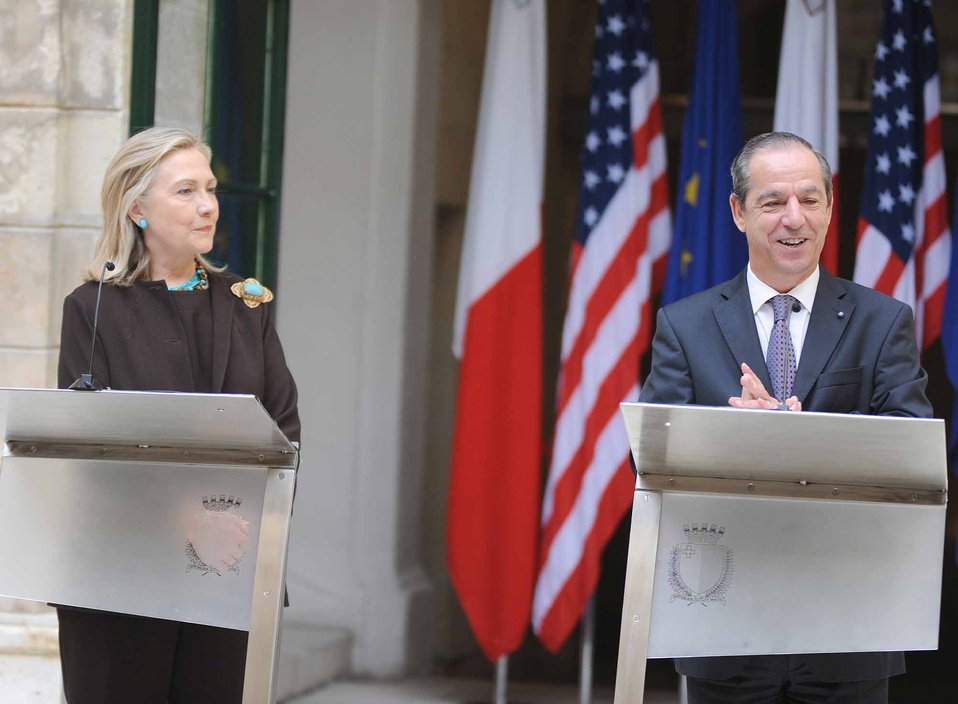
Secretary Clinton and Maltese Prime Minister Gonzi Hold a Joint Press Conference

U.S. Secretary of State Hillary Rodham Clinton and Maltese Prime Minister Lawrence Gonzi hold a joint press conference at the Auberge de Castille in Valletta, Malta, on October 18, 2011.